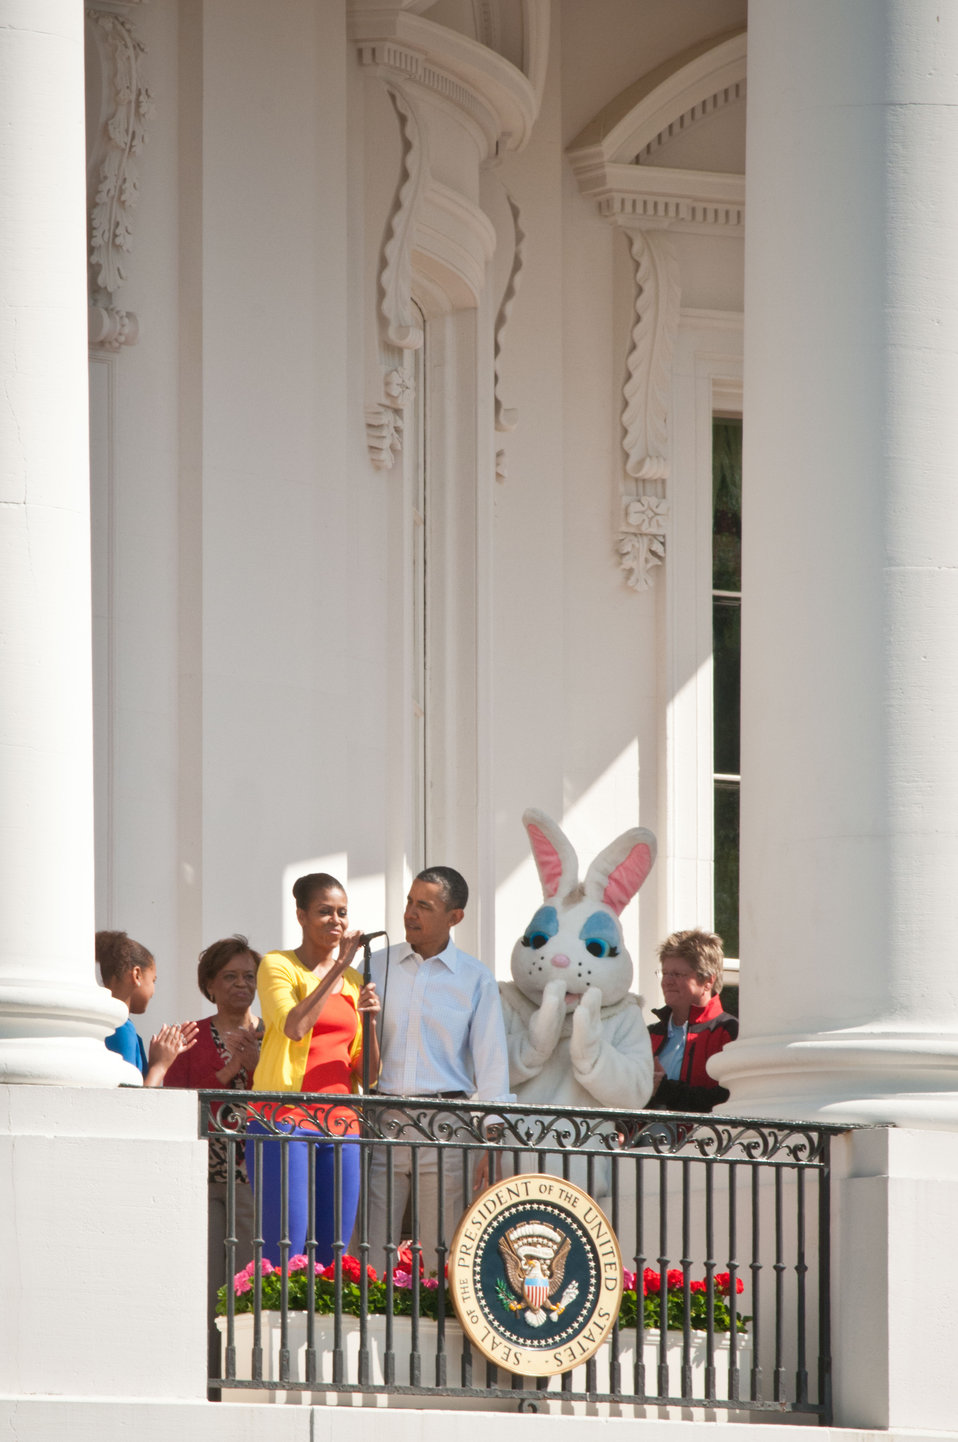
President Barack Obama, First Lady Michelle Obama, daughter Sasha and the Easter Bunny welcome visitors to the White House Easter Egg Roll on Monday, April 9, 2012 in Washington, D.C. This year’s Easter Egg Roll is the 134th year of the largest annual public event held at the White House. This year’s theme is “Let’s Go, Let’s Play, Let’s Move!” The theme is the emphasis of First Lady Michelle Obama’s Let’s Move initiative promoting health and wellness and encouraging children to lead healthy and active lives to solve the problem of childhood obesity.